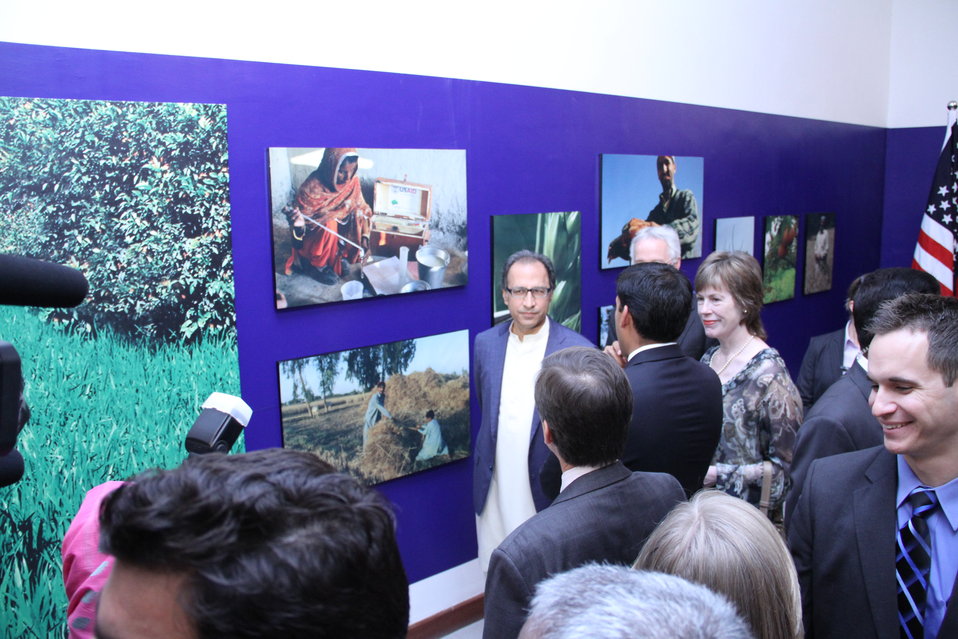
Photo Exhibition Celebrate US-PAK Cooperation at PNCA, Islamabad on April 13, 2012